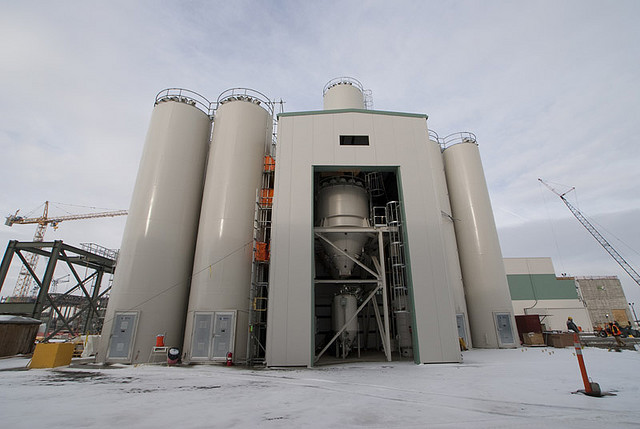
The Hanford site, the Glass Former Facility at the at the Waste Treatment Plant will contain materials used for the vitrification process.